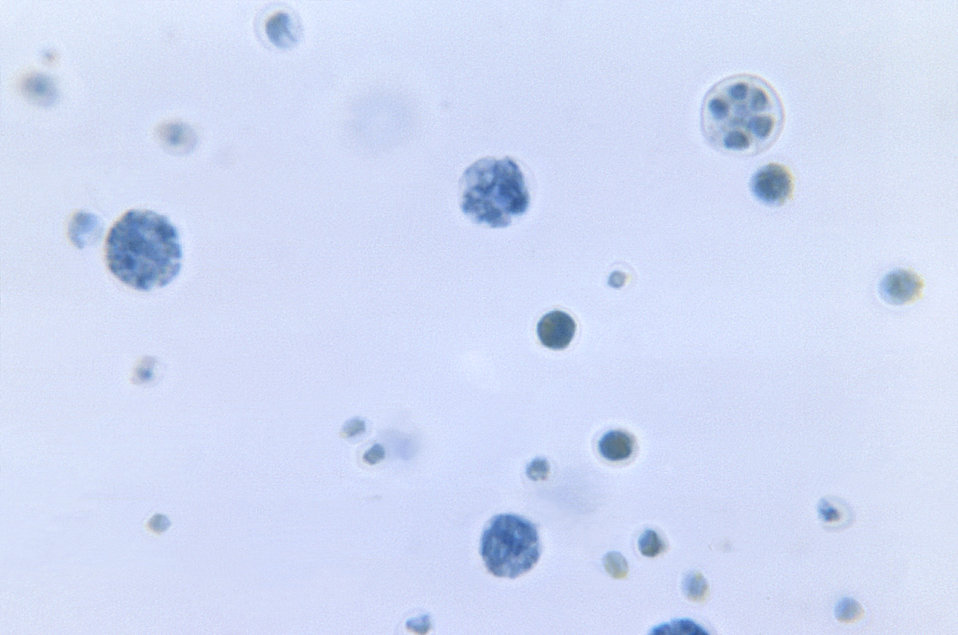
This photomicrograph depicted numbers of the microalga, Chlorella protothecoides. C. protothecoides is a heterotroph, which means it's an organism that requires carbon in order to thrive, and obtains this nutrient through its consumption of organic substrates. This algal culture was prepared using a lactophenol cotton blue mount fixation technique.